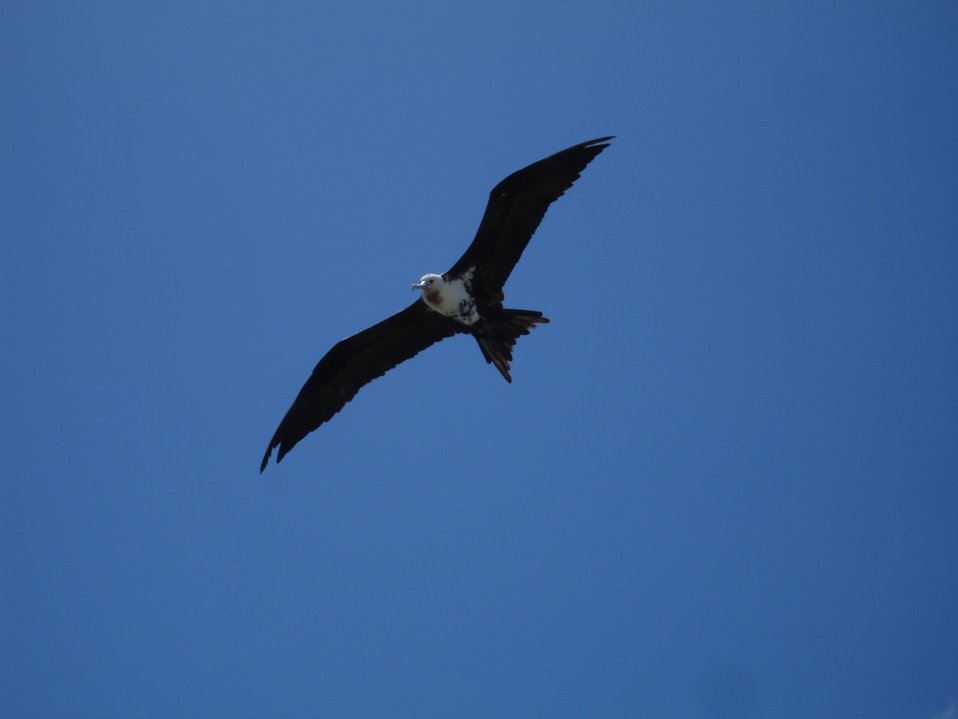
Frigate bird in flight